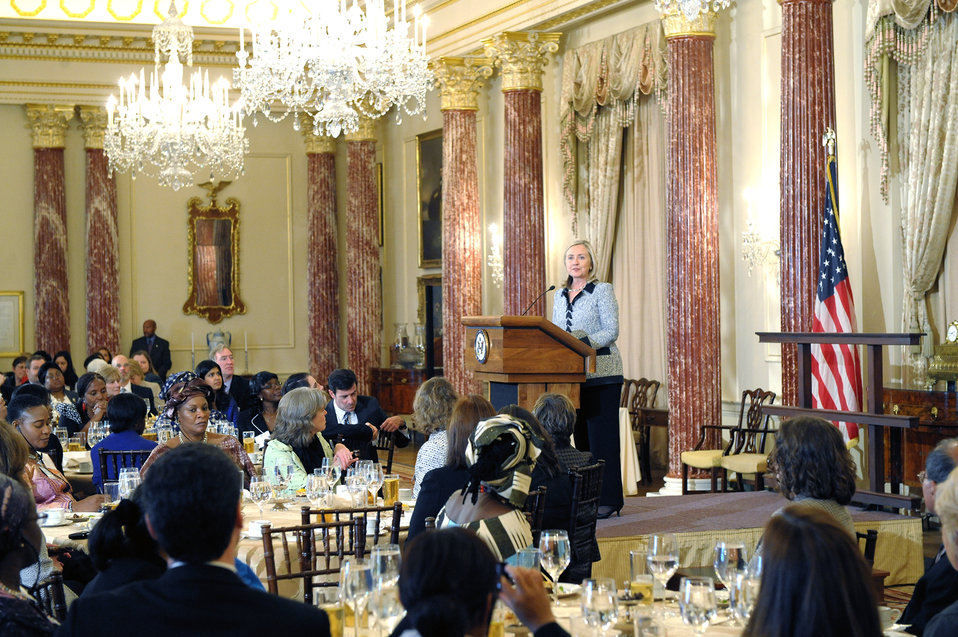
Secretary Clinton Delivers Remarks to African Women Entrepreneurs

U.S. Secretary of State Hillary Rodham Clinton delivers remarks to 40 women entrepreneurs from 36 African nations participating in the 2011 African Women's Entrepreneurship Program at the U.S. Department of State in Washington, D.C., on October 3, 2011.